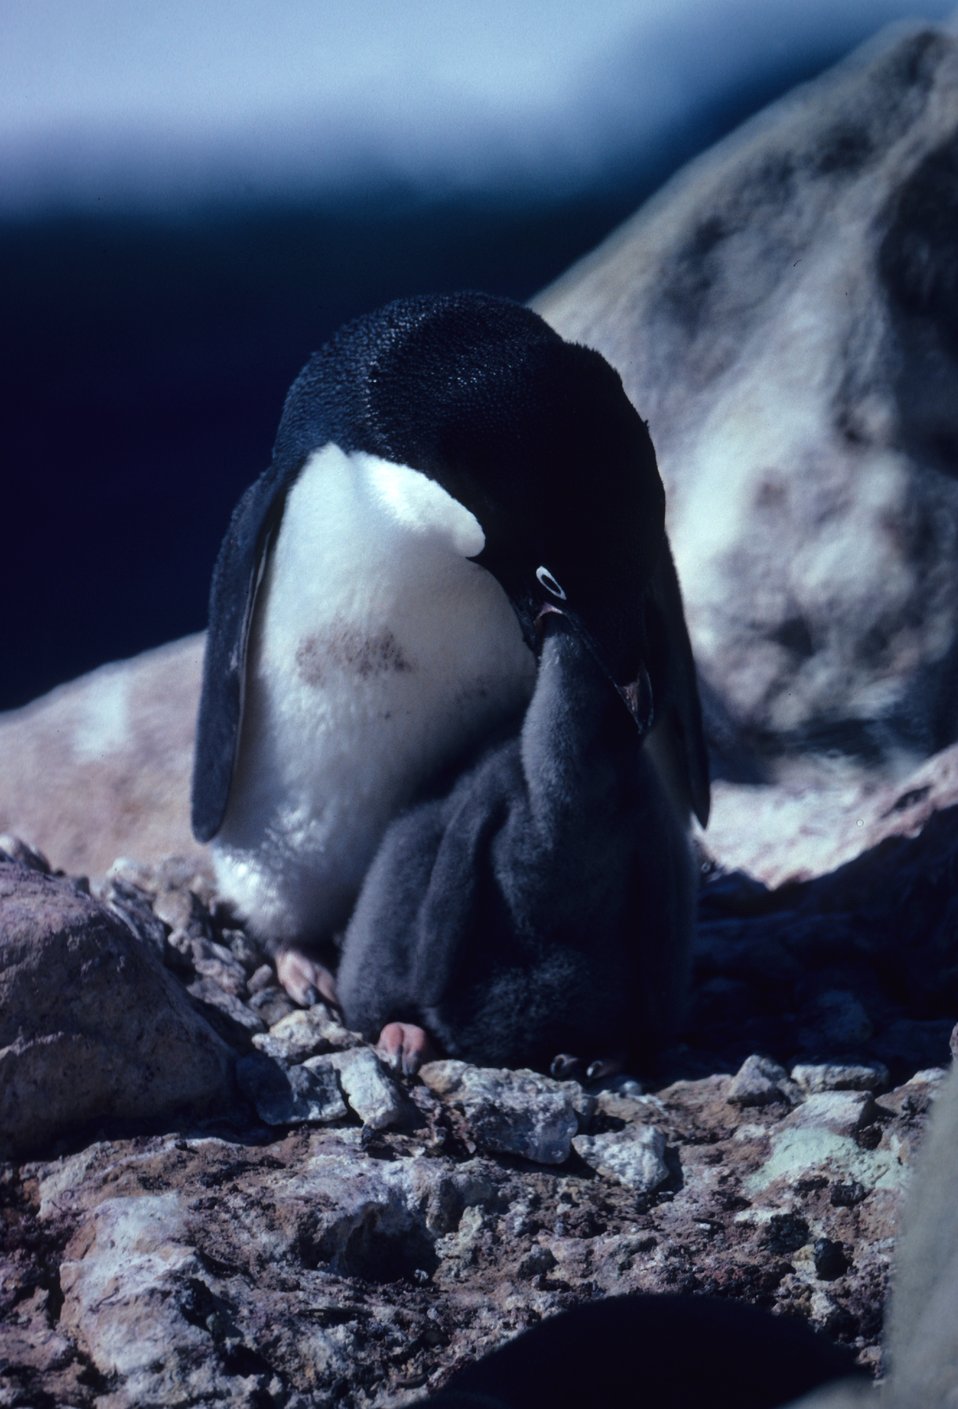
Adelie Penguin feeding chick.